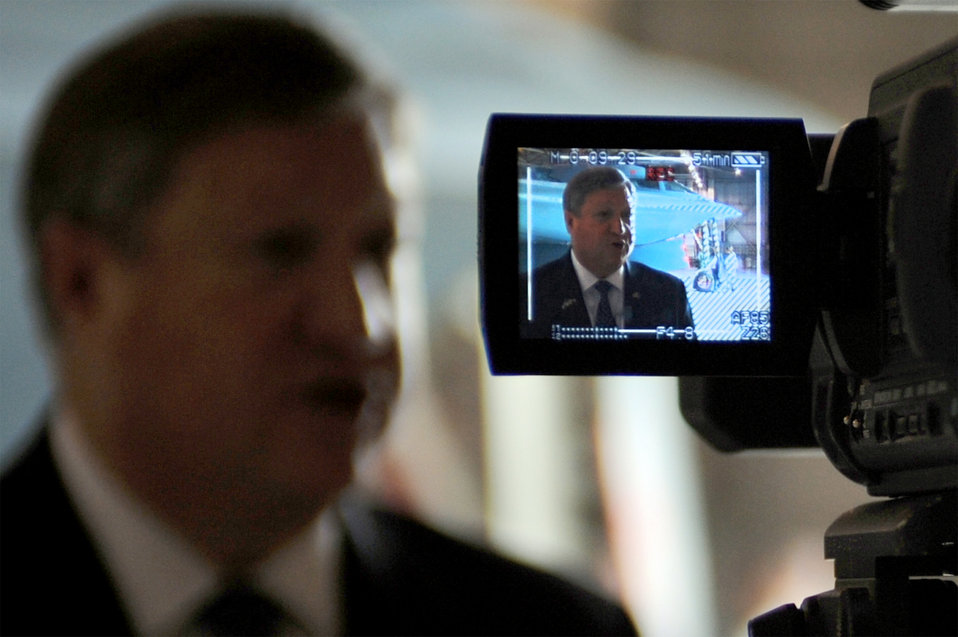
SecAF impressed with Airmen, B-2

Secretary of the Air Force Michael Donley completes an interview with Staff Sgt. Scott Johnson and Airman 1st Class Montse Ramirez June 8, 2010, at Whiteman Air Force Base, Mo. In addition to touring the base and getting an update on the B-2 Spirit's mission, Secretary Donley met with base commanders and civic leaders from the Base Community Council to discuss Whiteman AFB's tie to the community. Sergeant Johnson and Airman Ramirez are assigned to the 509th Bomb Wing Public Affairs office.